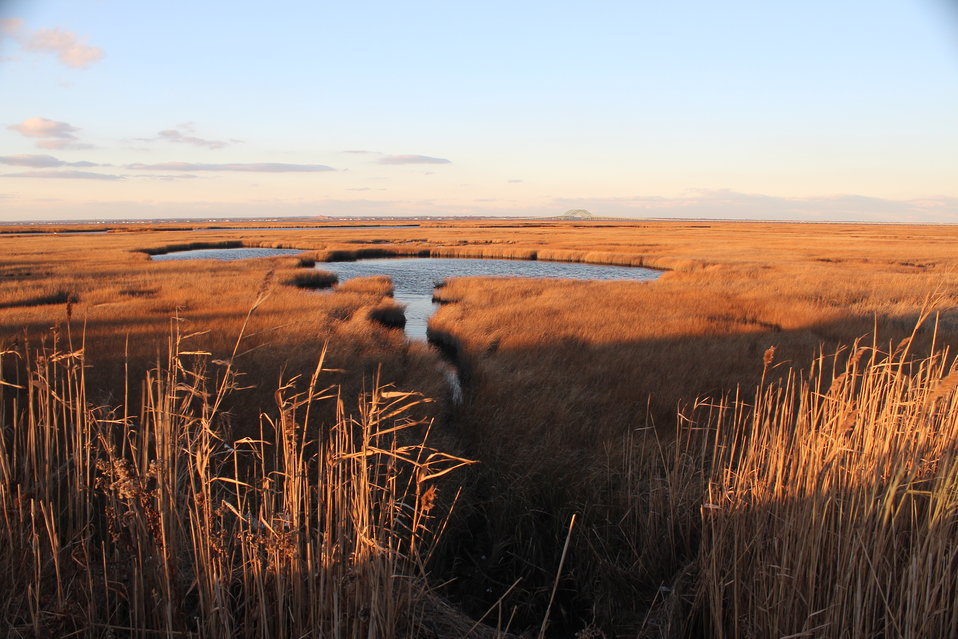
December 5, 2012 Long Island sunset, New York

Moments like this were welcomed during the long work days and often emotional scenes of devastation. This photo was taken looking across the wetlands of Captree Island, Long Island, New York.